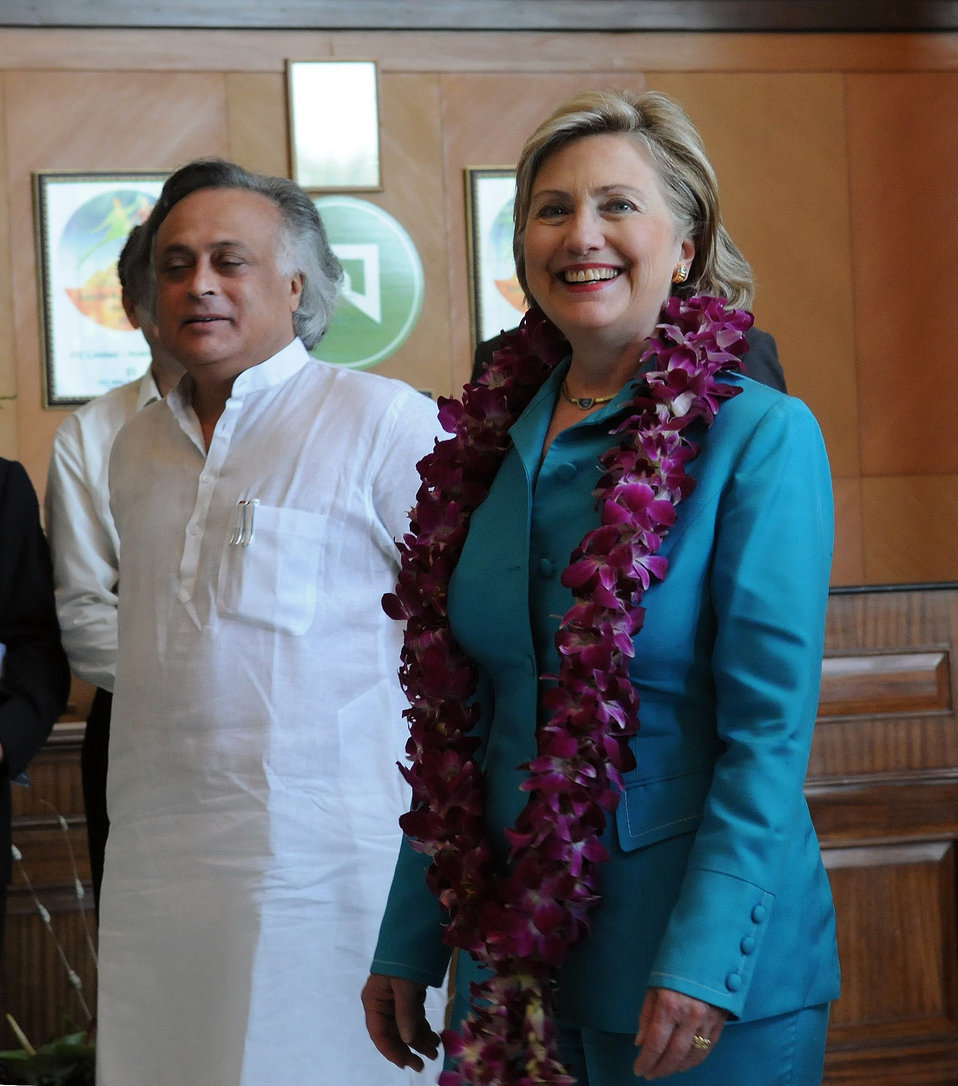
Secretary Clinton Visits ITC Green Center

U.S. Secretary of State Hillary Rodham Clinton is greeted by Minister for Forests and Environment Jairam Ramesh at the ITC Green Center in Gurgaon, outside of New Delhi, India July 19, 2009.